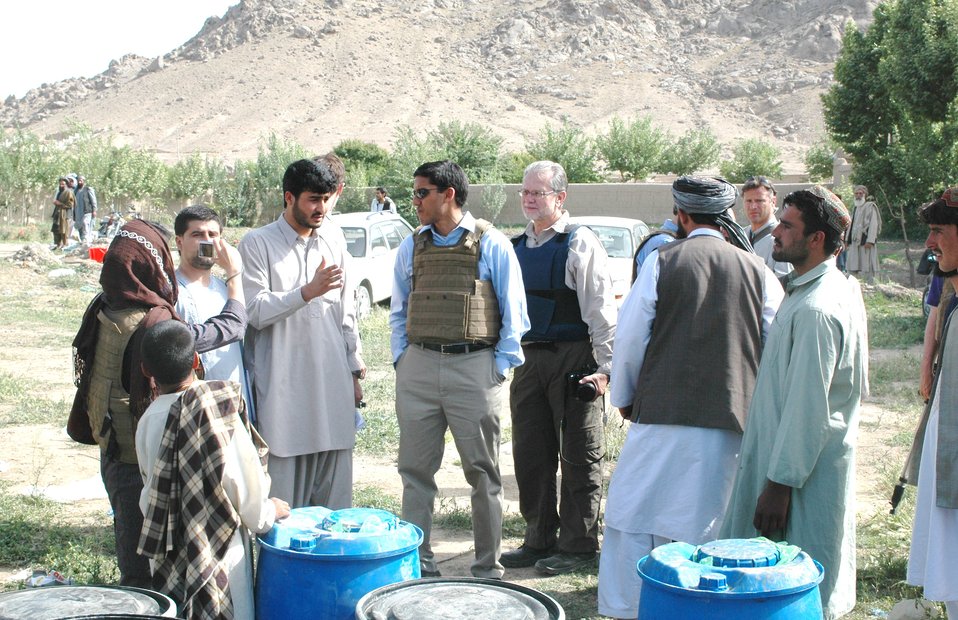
Dr Shah Visits Argandab April 10, 2010